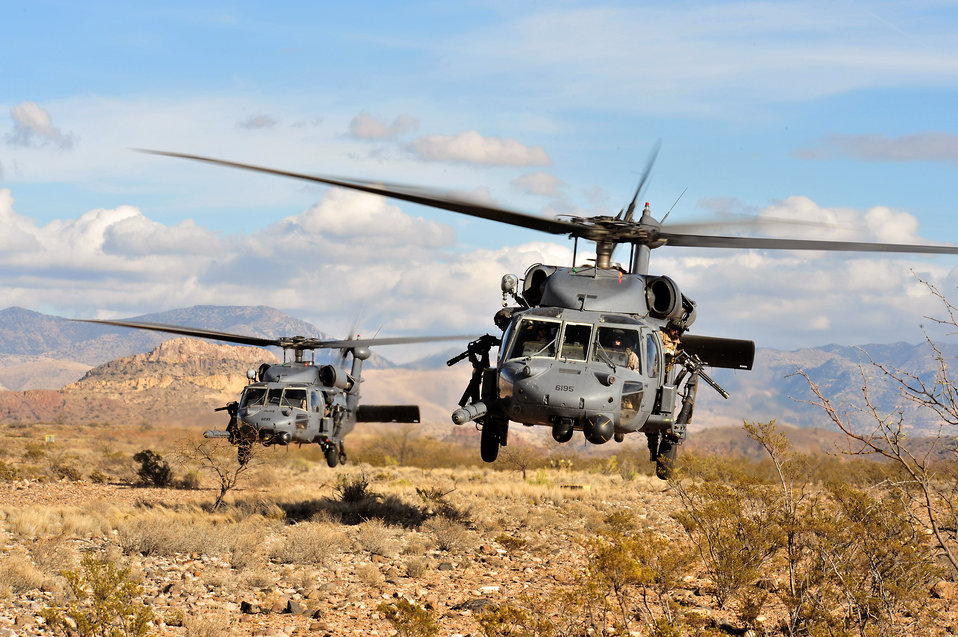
Multinational recovery exercise kicks off at Davis-Monthan

Two HH-60G Pave Hawks land during a personnel recovery training exercise Dec. 7 at Davis-Monthan Air Force Base, Ariz.. More than 800 ground recovery personnel took part in Angel Thunder 2008, a combat search and rescue exercise.